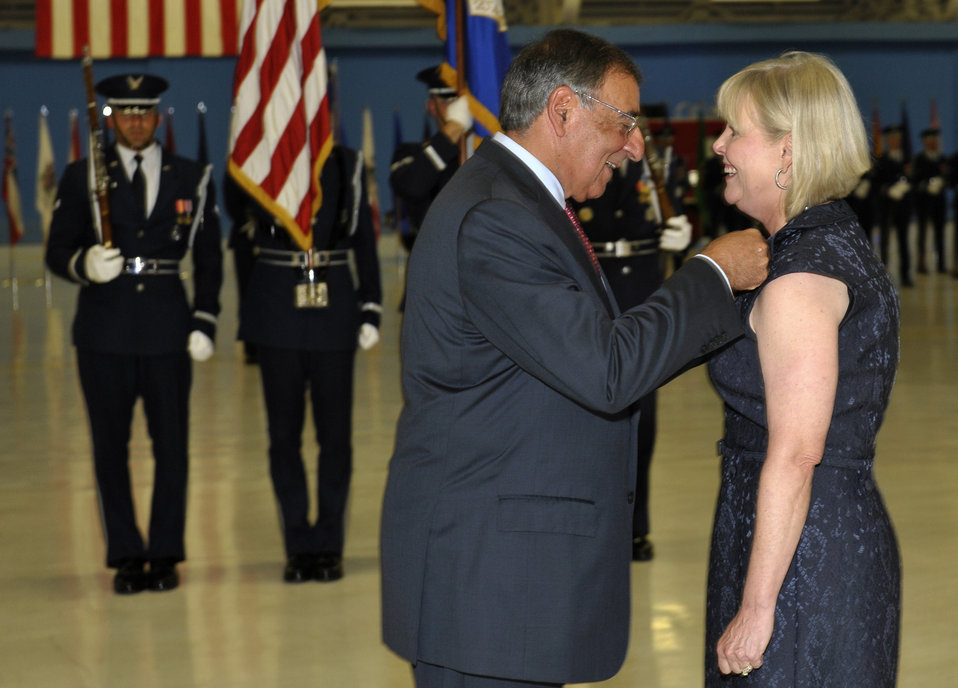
Welsh ‘humbled’ to serve as Air Force chief of staff

Secretary of Defense Leon Panetta awards Suzie Schwartz, wife of former Air Force Chief of Staff Gen. Norton Schwartz, with the Distinguished Public Service Award on the occasion of Schwartz's retirement during a ceremony at Joint Base Andrews, Md., Aug. 10, 2012. Schwartz served as Air Force chief of staff for four years and was succeeded by Gen. Mark A. Welsh III. Welsh previously commanded U.S. Air Forces in Europe.